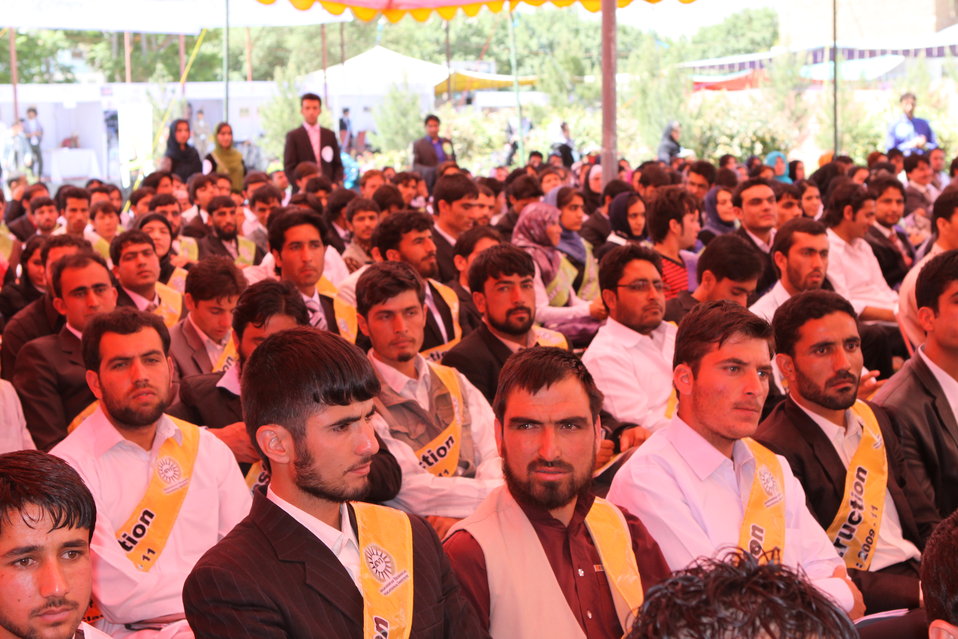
100522 ATVI Graduation 044